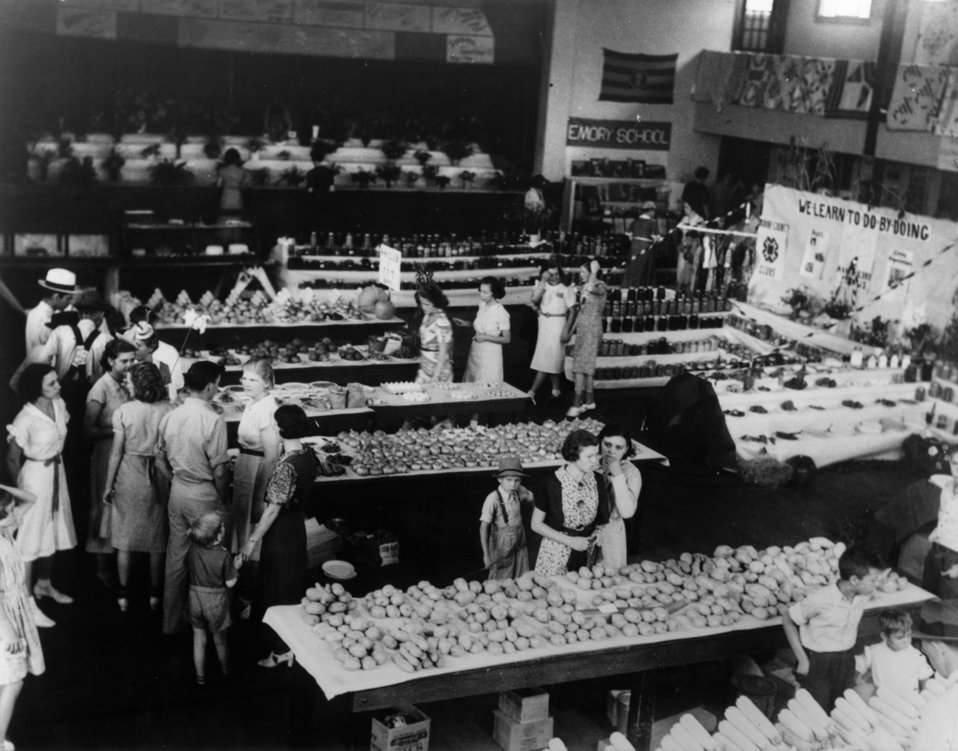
Early settlers at Oak Ridge